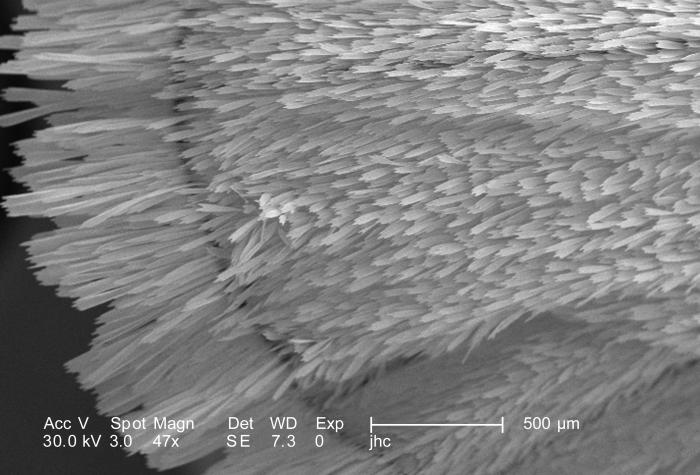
This scanning electron micrograph (SEM) depicted a region of the exoskeletal surface of an unidentified white moth, which was found deceased on the ground in Decatur, Georgia. Under this low magnification of only 47X, you'll note the presence of numerous 'scales', which are actually outcroppings of the surface, and are composed of the same material, a durable substance known as 'chitin'. Notice how the length of the scales increases as their location changes, moving out towards the periphery of this region.